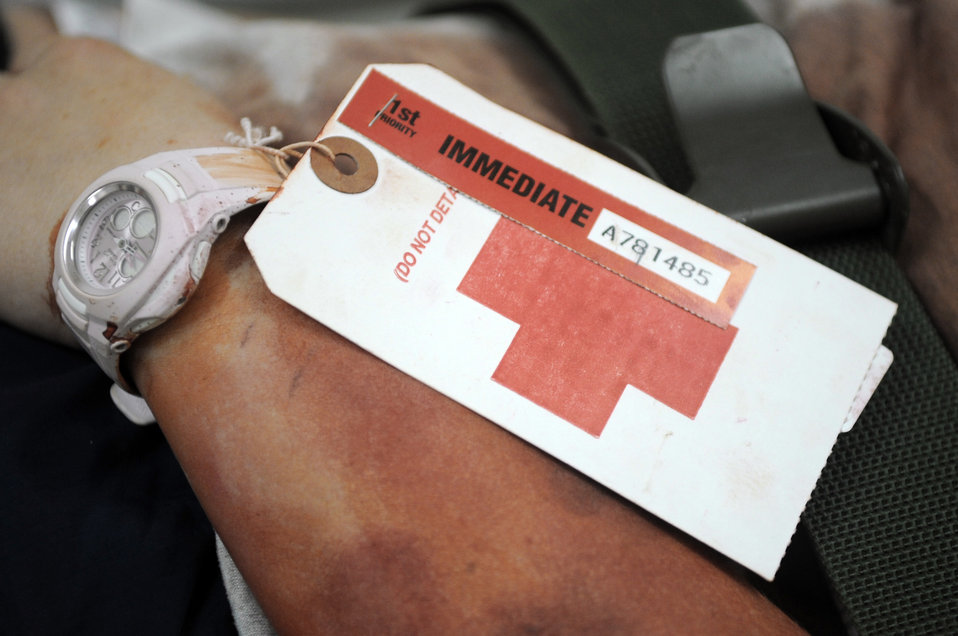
Airmen test emergency response at Joint Base Balad

A patient is transported to the Air Force Theater Hospital with a tag that describes her medical condition during a major accident response exercise June 5 at Joint Base Balad, Iraq. The purpose of a MARE is to test the responsive actions of emergency response and medical personnel.